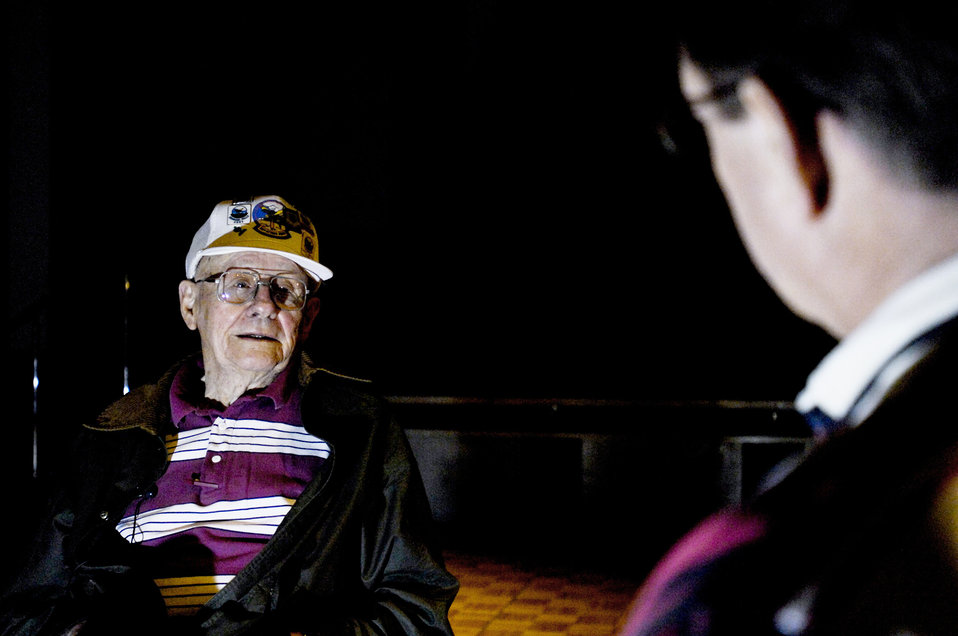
3rd Bombardment Group reunites at Elmendorf

Retired Col. Bill Beck tells the story about what his experience as a member of the 3rd Bombardment Group during an interview Aug. 13 at Elmendorf Air Force Base, Alaska. Colonel Beck was a pilot for the 3rd BG stationed in Australia during World War II. The 3rd BG stopped Japan from advancing into the South Pacific during World War II. Colonel Beck and several other members from the 3rd BG reunited here for their 20th reunion Aug. 12 through 16. This is their last scheduled reunion.